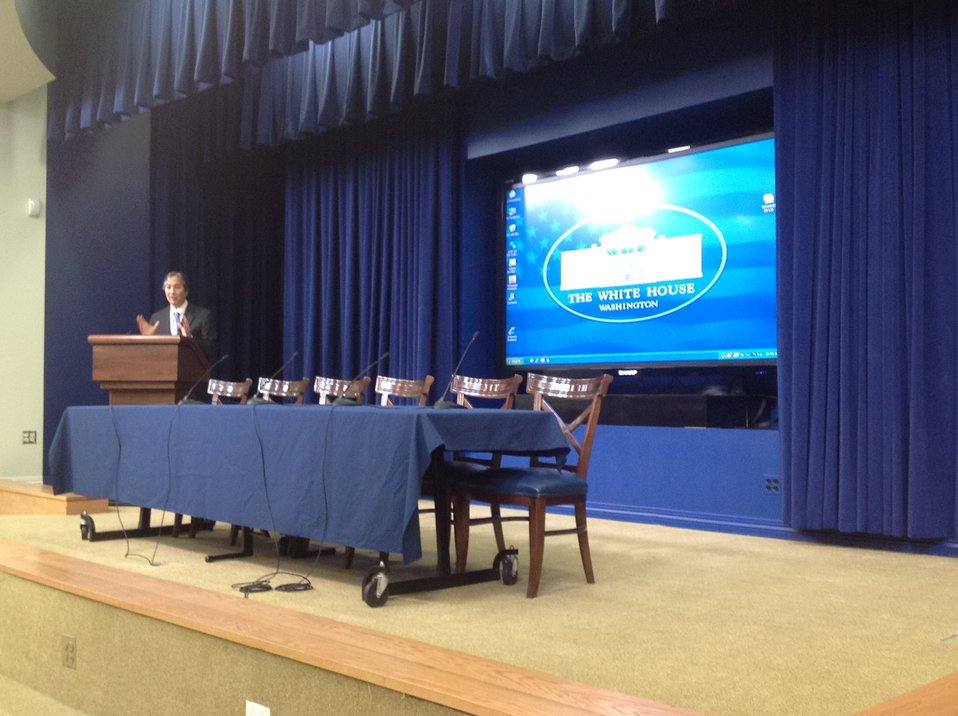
Dr. Howard Koh

WH 2012 World Hepatitis Day Event